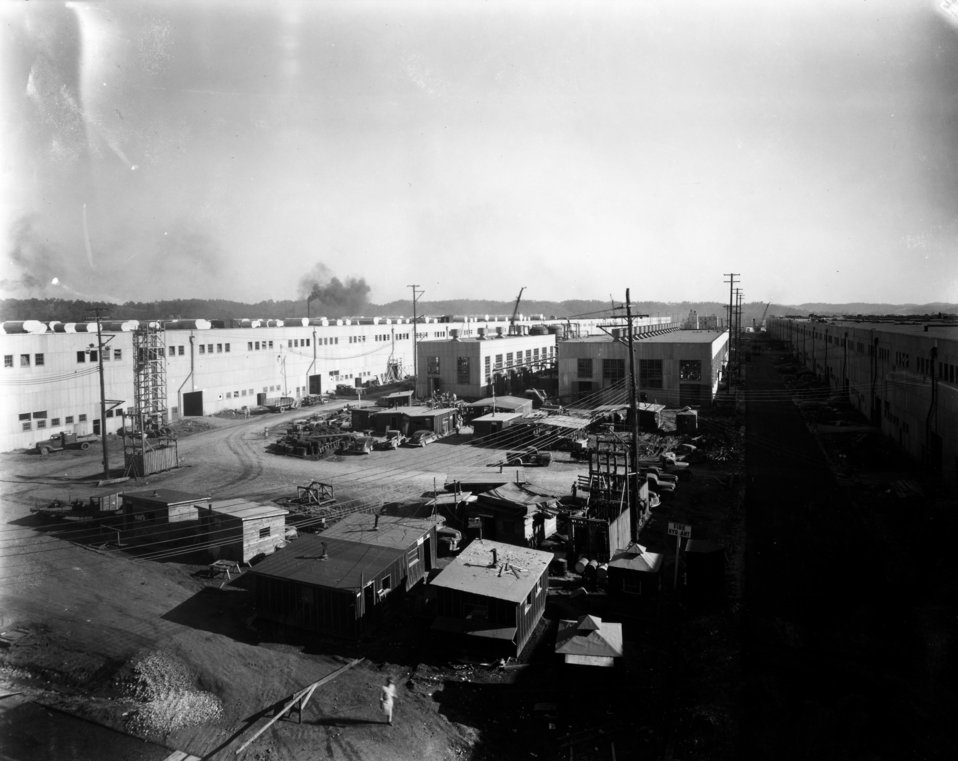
K-25 at Oak Ridge